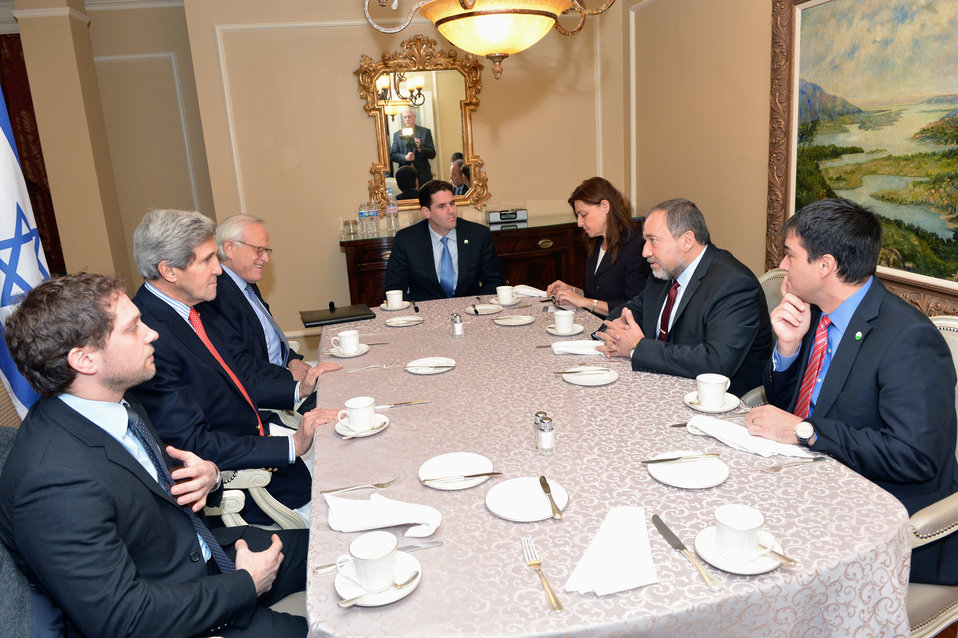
Secretary Kerry Meets With Israeli Foreign Minister Lieberman

U.S. Secretary of State John Kerry meets Israeli Foreign Minister Avigdor Lieberman in Washington, D.C., on December 8, 2013.